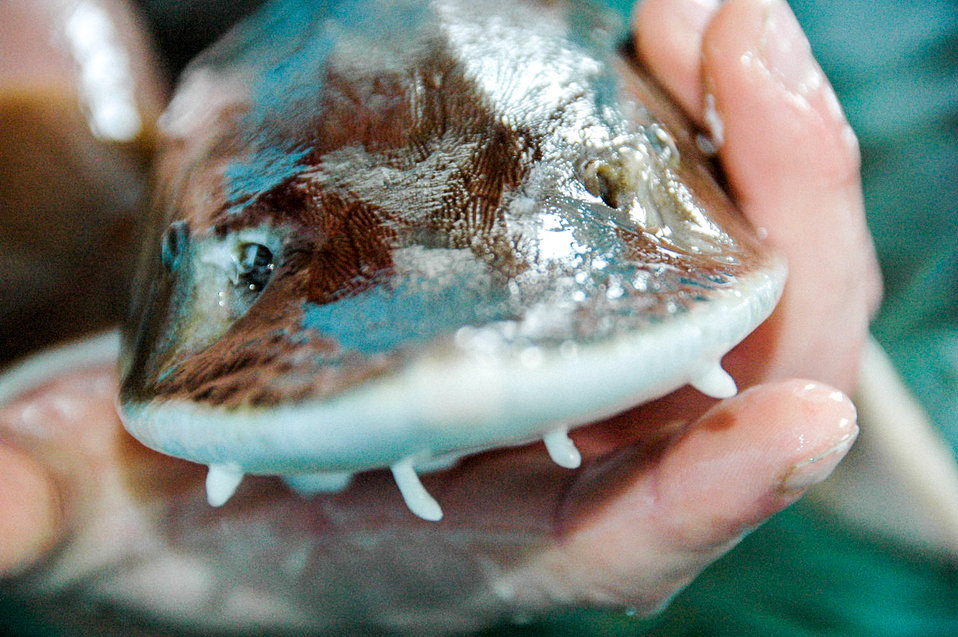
Nares

Are those eyes or nares? They are nares (or nostrils), you can see the eyes of this Shovelnose Sturgeon tucked behind and to the side of the nares.